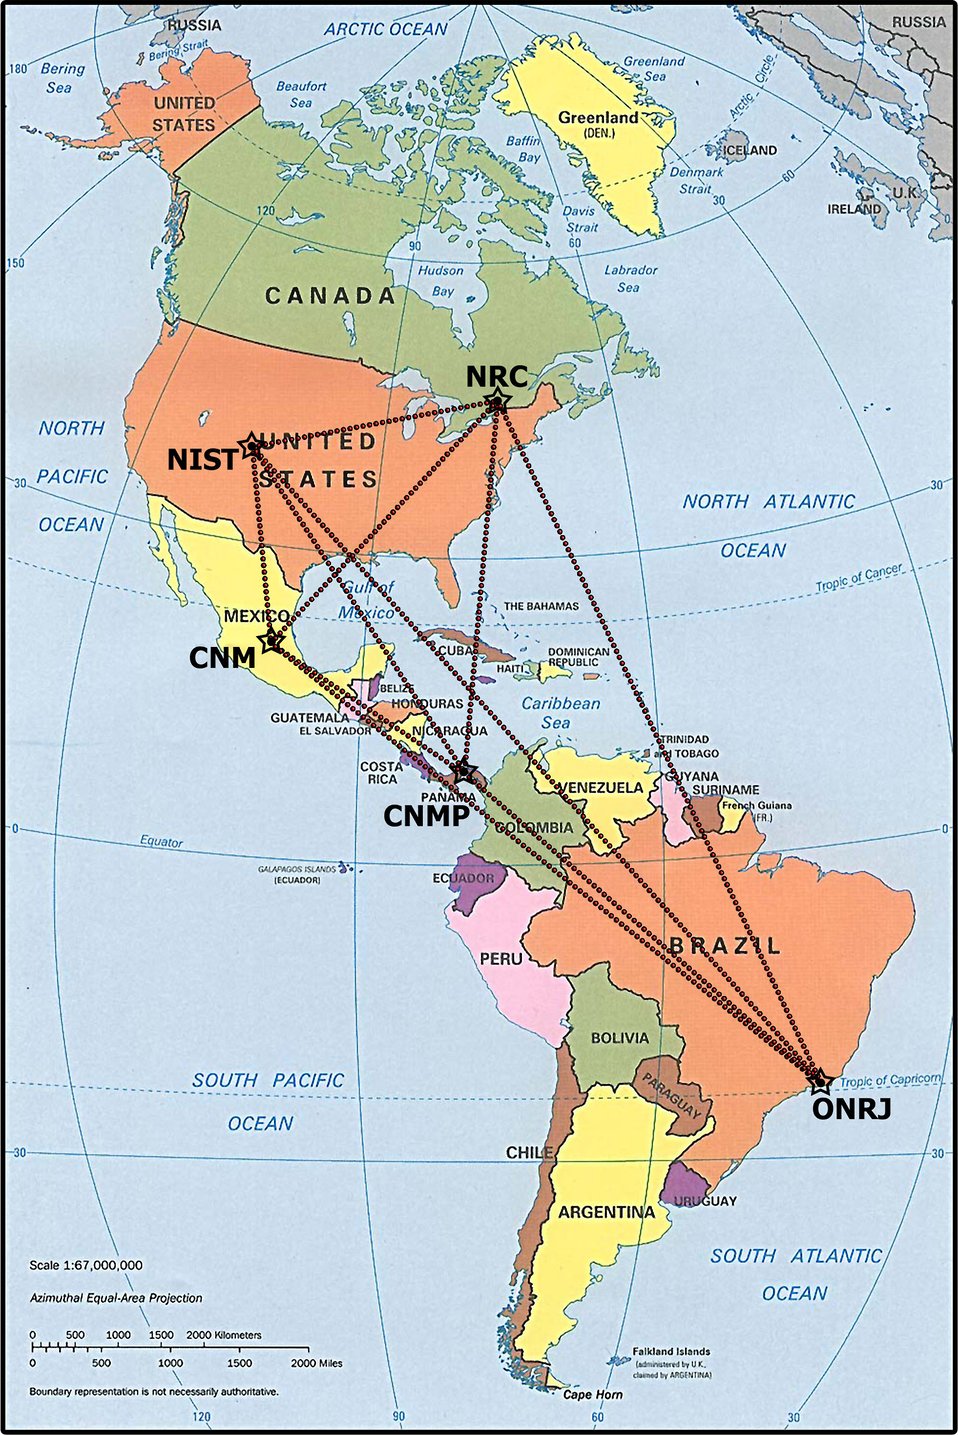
GPS; Internet

The Sistema Interamericano de Metrologia (SIM) time and frequency network spans a large geographical area, connecting Canada, the United States, Mexico, Panama, and Brazil. The baseline from the National Institute of Standards and Technology to the Brazilian national metrology institute is 9500 km.